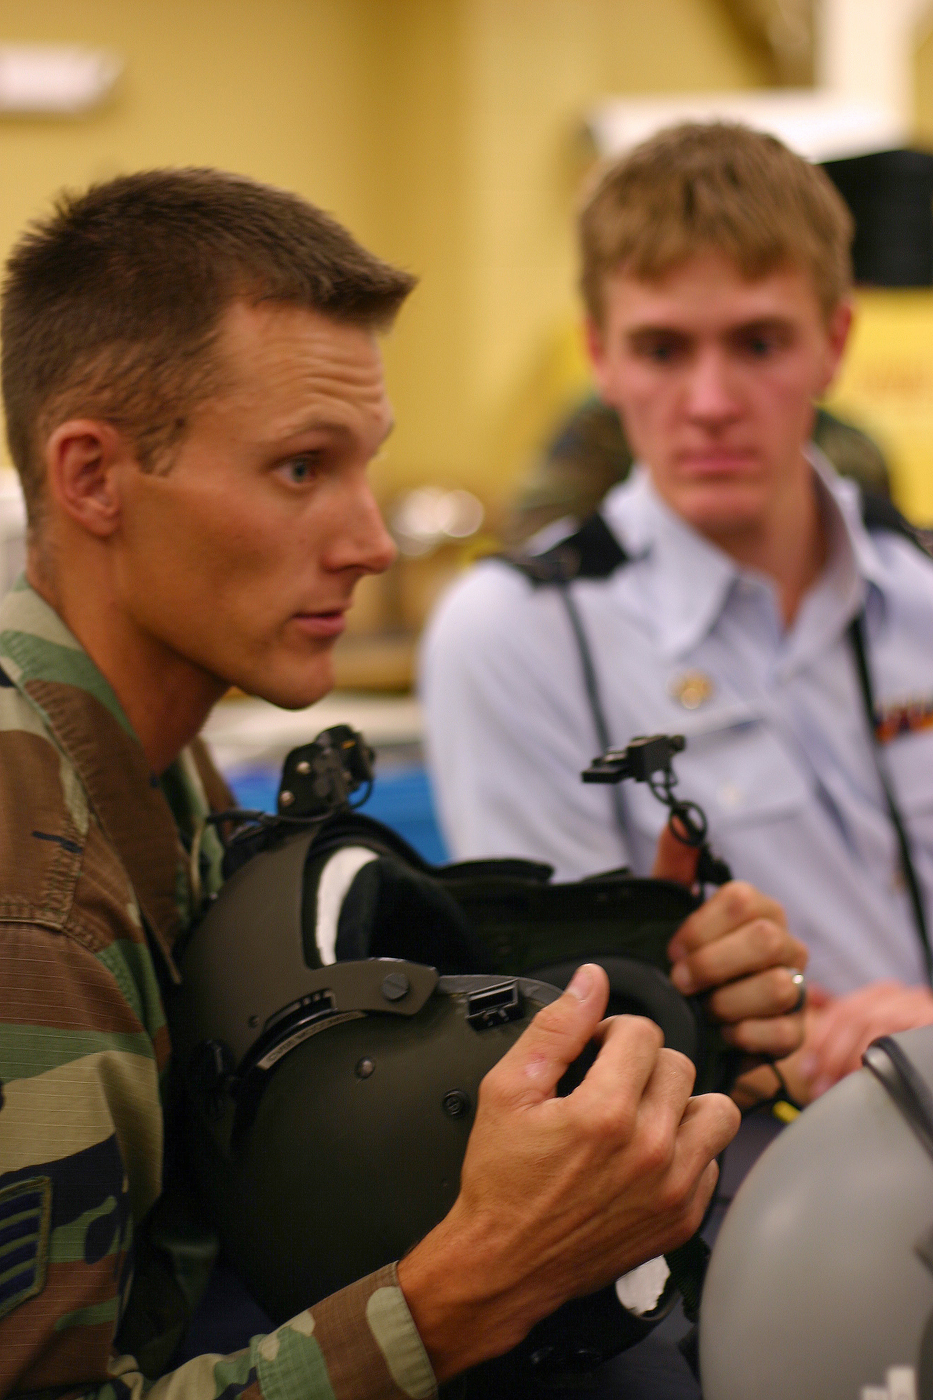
Top Junior ROTC cadets explore AF opportunities

Staff Sgt. Robert Arnold talks with Junior ROTC Cadet Kyle Sanders and others about equipment used by helicopter pilots at the 58th Special Operations Wing at Kirtland Air Force Base, N.M. More than 50 high school students from 20 states nationwide visited the squadron as part of the Air Force Junior ROTC Aerospace and Technology Honor Camps.